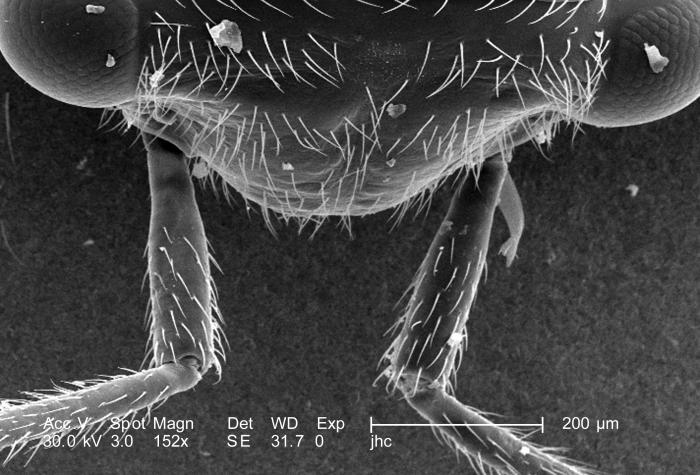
Under a low magnification of 153X, this scanning electron micrograph (SEM) depicted a number of morphologic structures found emanating from the head region of what was an unidentified 1/4"-sized black flying insect with a small red mark on its dorsum, found in the suburbs of Decatur, Georgia. As a member of the Phylum Arthropoda, i.e., Arthro = 'jointed', and poda 'leg', this insect sported three pairs of jointed legs, which placed it into the Family, Insecta>.